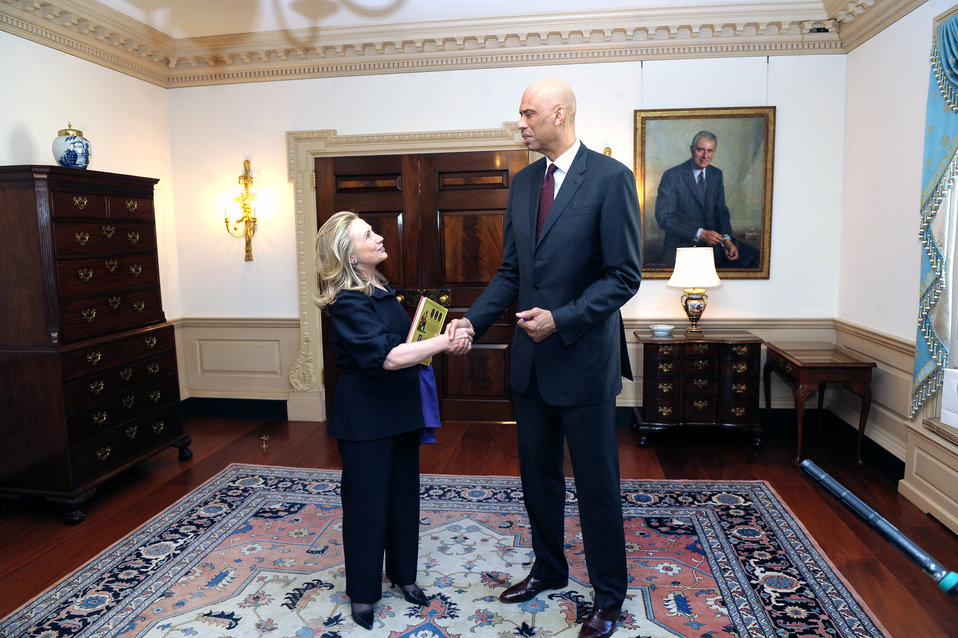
Secretary Clinton Meets With Kareem Abdul-Jabbar

U.S. Secretary of State Hillary Rodham Clinton meets with Hall-of-Famer Kareem Abdul-Jabbar, the NBA’s All-Time Leading Scorer and a New York Times’ best-selling author, to discuss his new role as a global Cultural Ambassador, at the U.S. Department of State in Washington, D.C., on January 18, 2012.